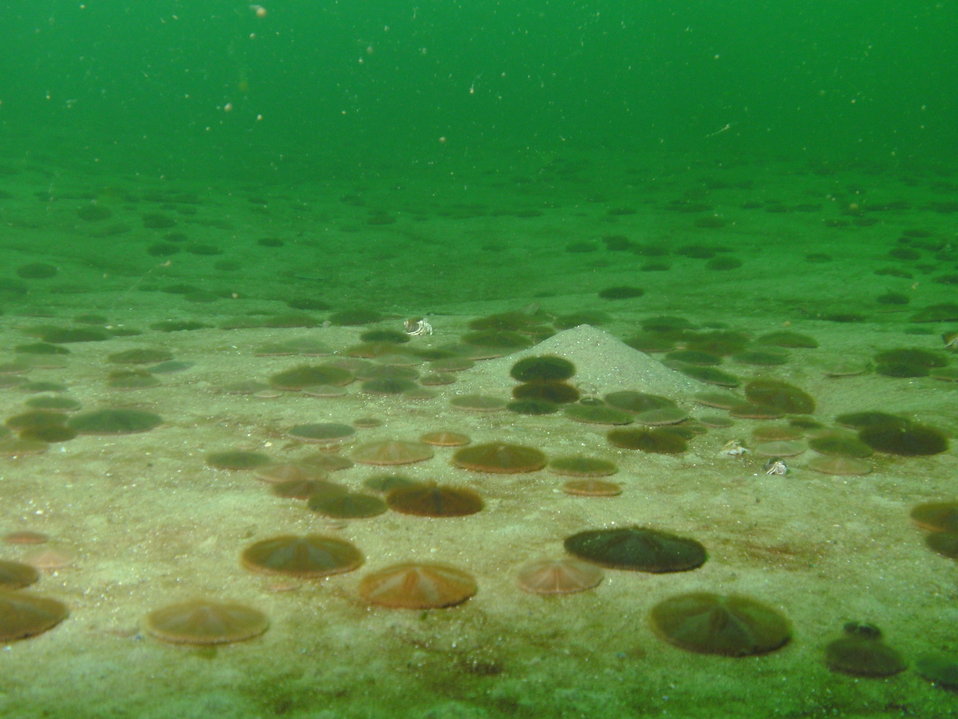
Not your average convention!

EPA New England divers unexpectedly came upon a very large gathering of sand dollars at Folly Cove in Gloucester, Massachusetts.

These sand dollars (echinarachnius parma) and a few baffled hermit crabs were photographed in 25 feet of water. This unusual scene was captured during a dive to monitor invasive species in the area.

From the diver, 'Folly Cove is one of my favorite spots to look for invasives. This work allows us to photodocument the presence of many different native species, such as these sand dollars and the attractive shorthorn sculpin.' ~Phil Colarusso, U.S. EPA

To see just how attractive a shorthorn sculpin is, continue to the next photo!